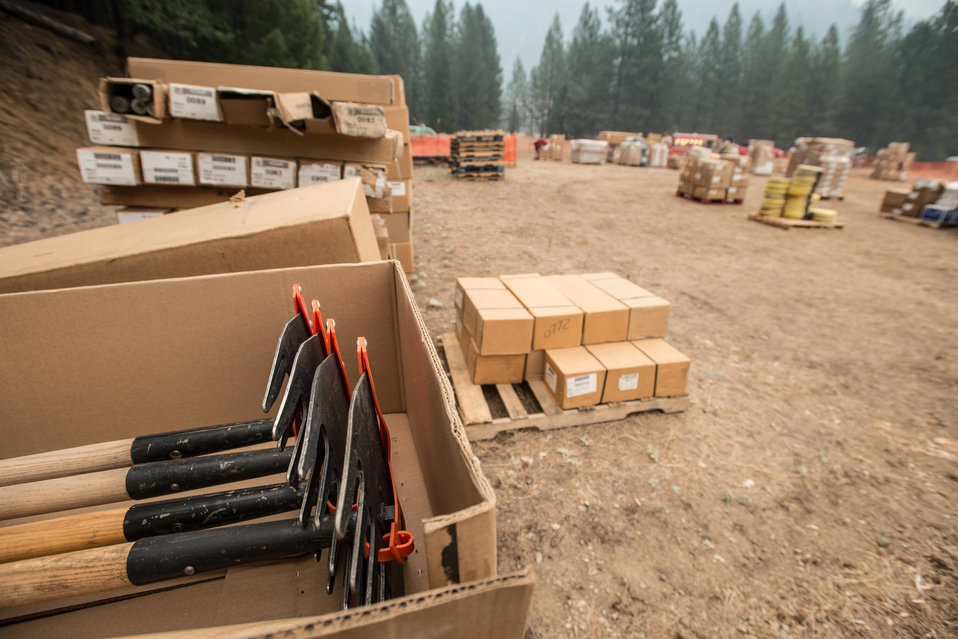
New Mccloud tools available for firefighters at the Salmon River Complex Fire burning northwest of Sawyers Bar and west of Etna and Yreka, CA in the Klamath National Forest, on Tuesday, Aug. 6, 2013. It is vital that when a firefighter needs fire resistant clothing, a Mccloud Tool, Pulaski Axe, Combi Tool, pumps, connectors and hoses to draw water from a portable reservoirs to pressurize hand line (fire hoses), they go to this centralized point to get readily available item for issue or replacement as needed. These supplies have been shipped from the National Interagency Supply Cache System depots and/or other caches to this and other fires across the nation.